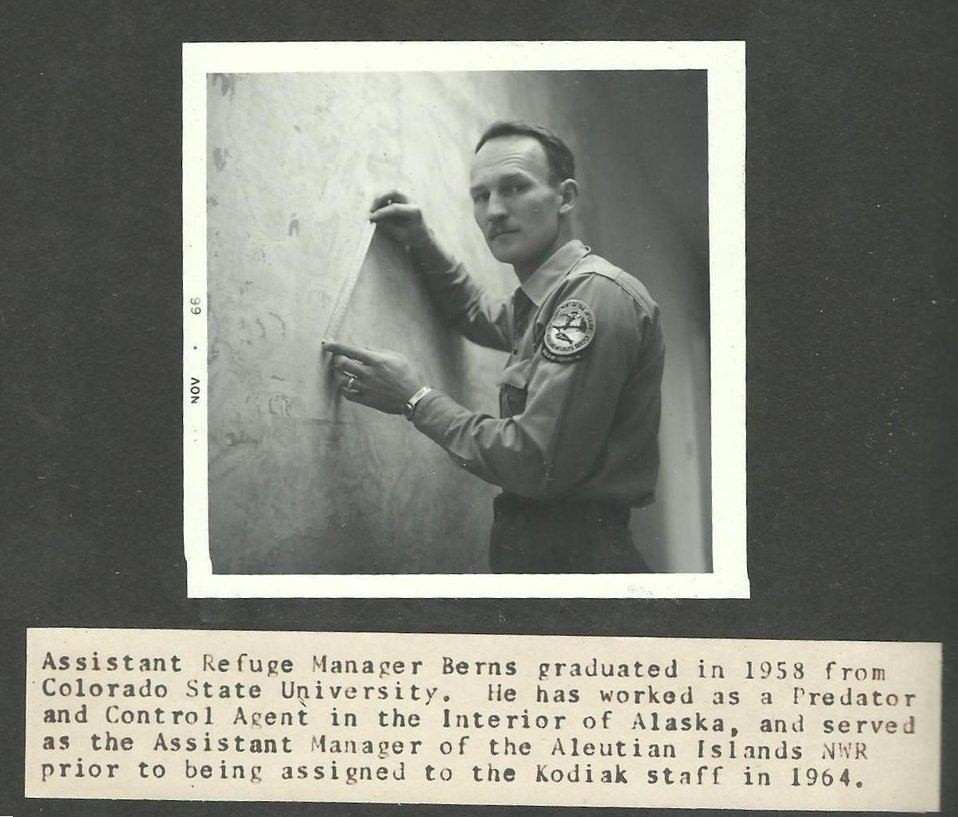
(1966) Asst Refuge Manager Berns

Credit: USFWS

Source and Contact: Kodiak National Wildlife Refuge